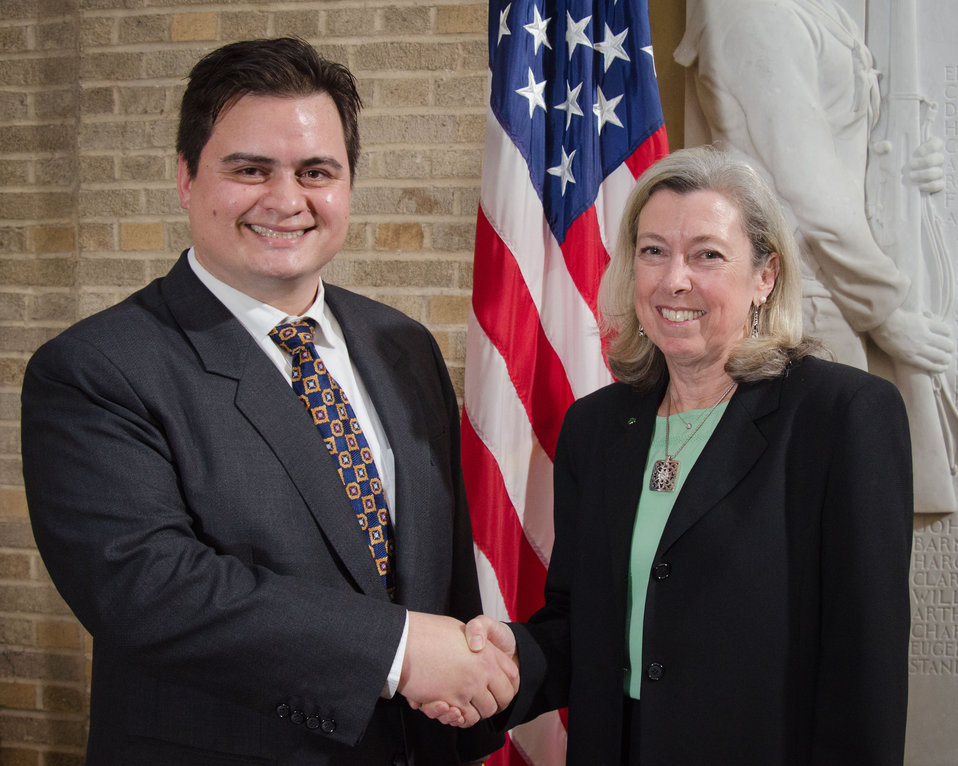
New Foreign Service Officer Anthony Gilbert (left) is congratulated by, Foreign Agriculture Service Acting Administrator Suzanne Heinen, after being sworn in at a ceremony at the U.S. Department of Agriculture in Washington, D.C., on Thursday, March 15, 2012. Mr. Gilbert will be stationed in Bogota, Colombia.